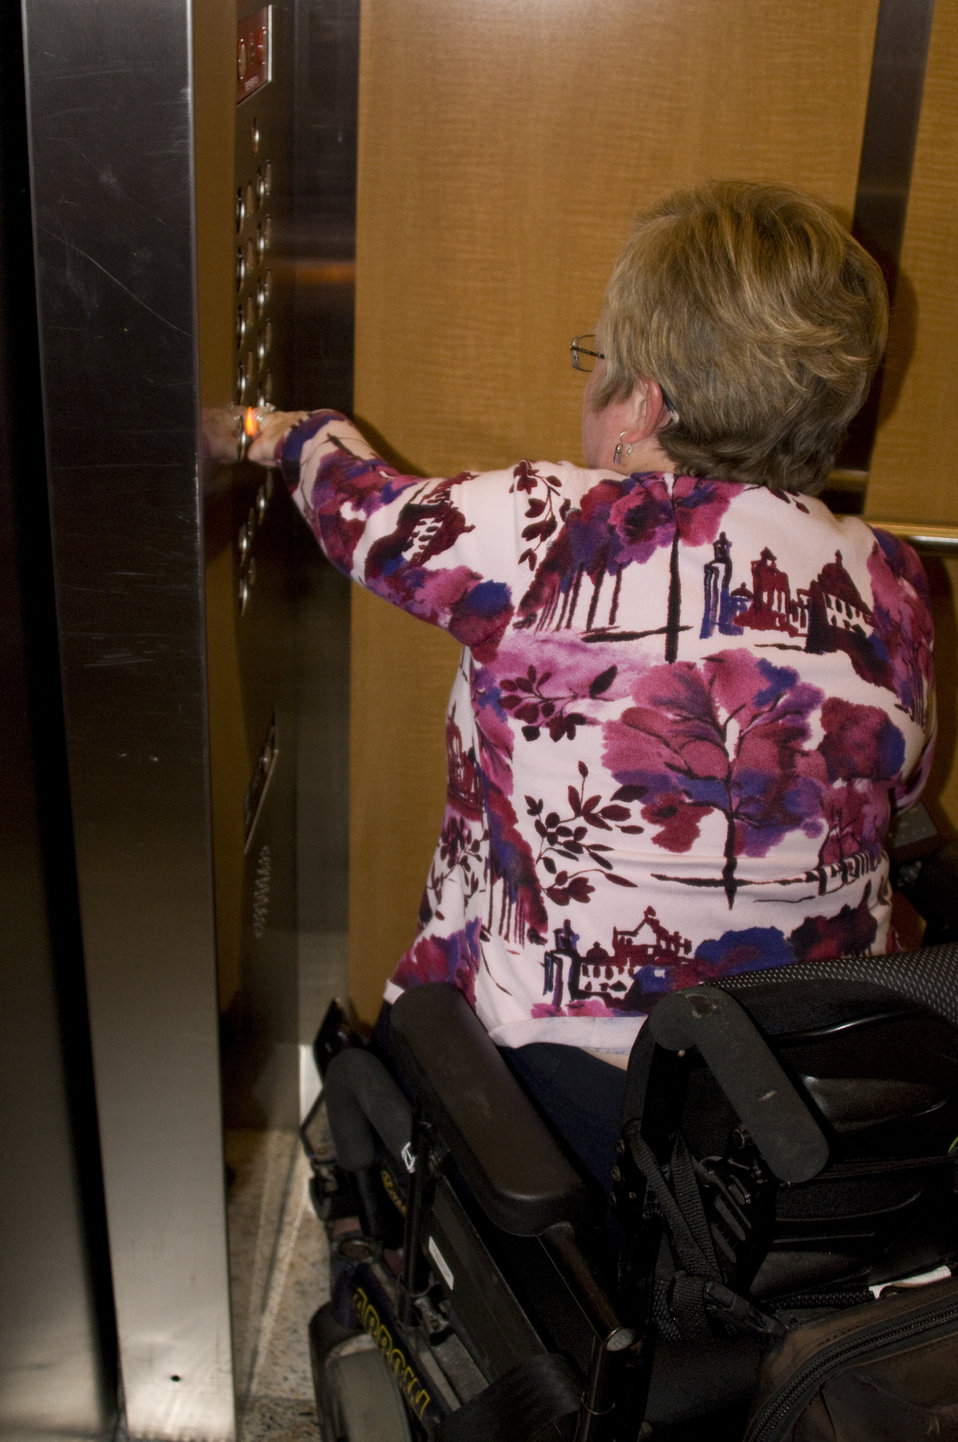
The woman picture here, was seated in her wheelchair, and had boarded an elevator in a highly-accessible building on one of the Centers for Disease Control's (CDC) Atlanta, Georgia campuses. She was in the process of pressing the desired floor button where she was to conduct her business. Note the height at which the selection, and emergency buttons were situated, making them universally-accessible for all passengers.